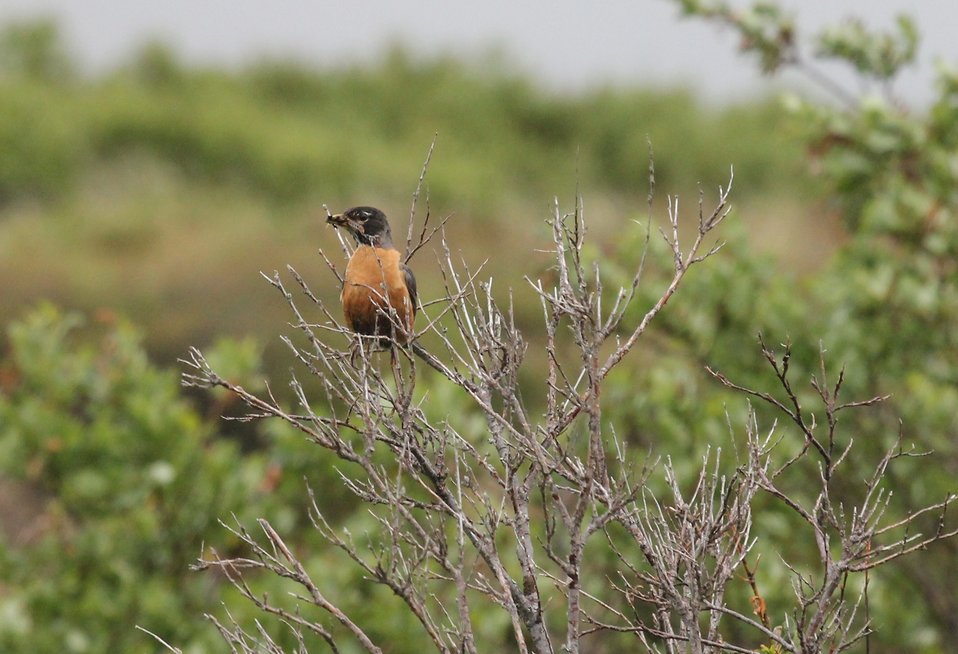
American robin

Andreafsky wilderness, Yukon Delta National Wildlife Refuge